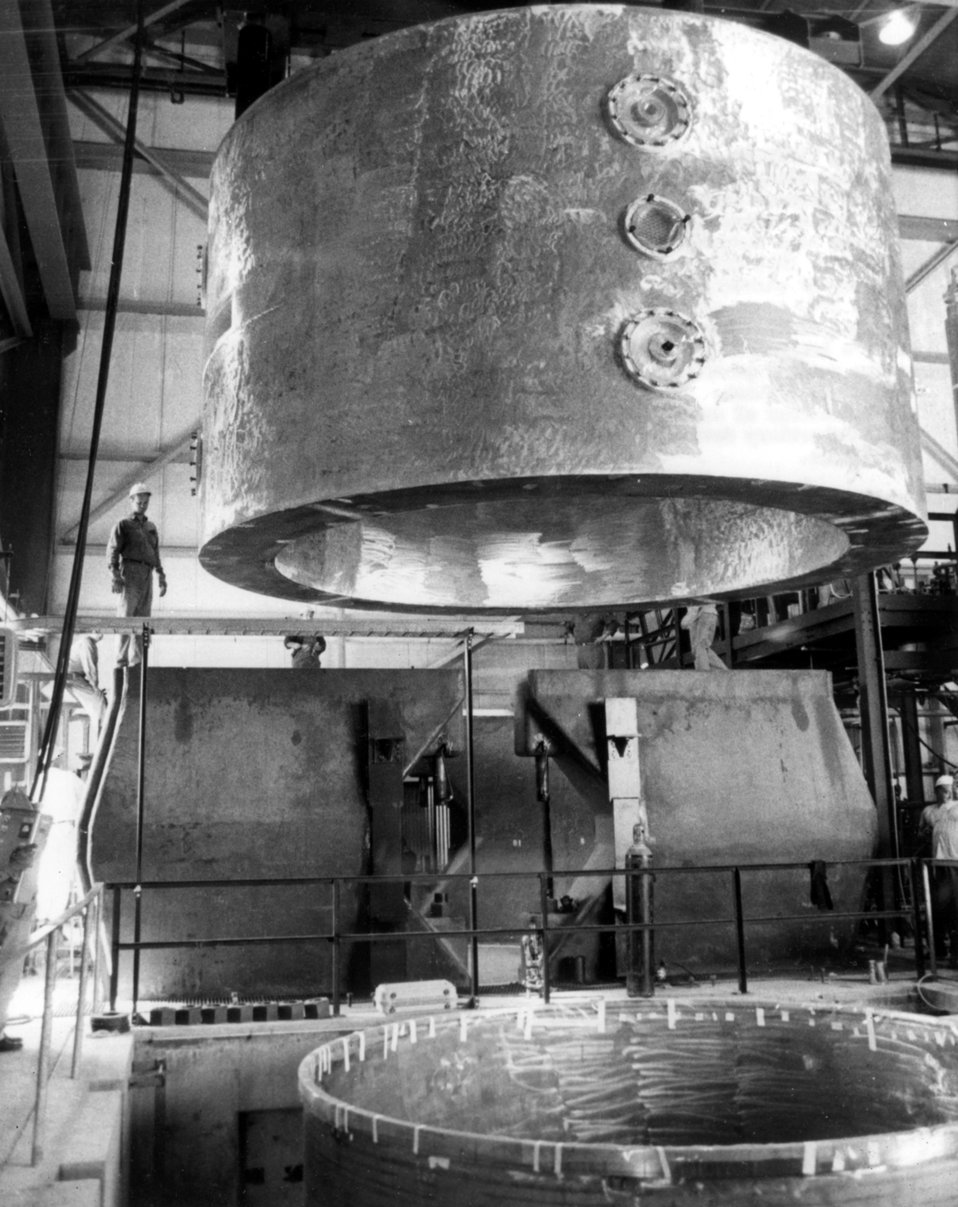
Coils of the world's largest superconducting magnet are lowered into their steel yoke at Argonne.
c.1969